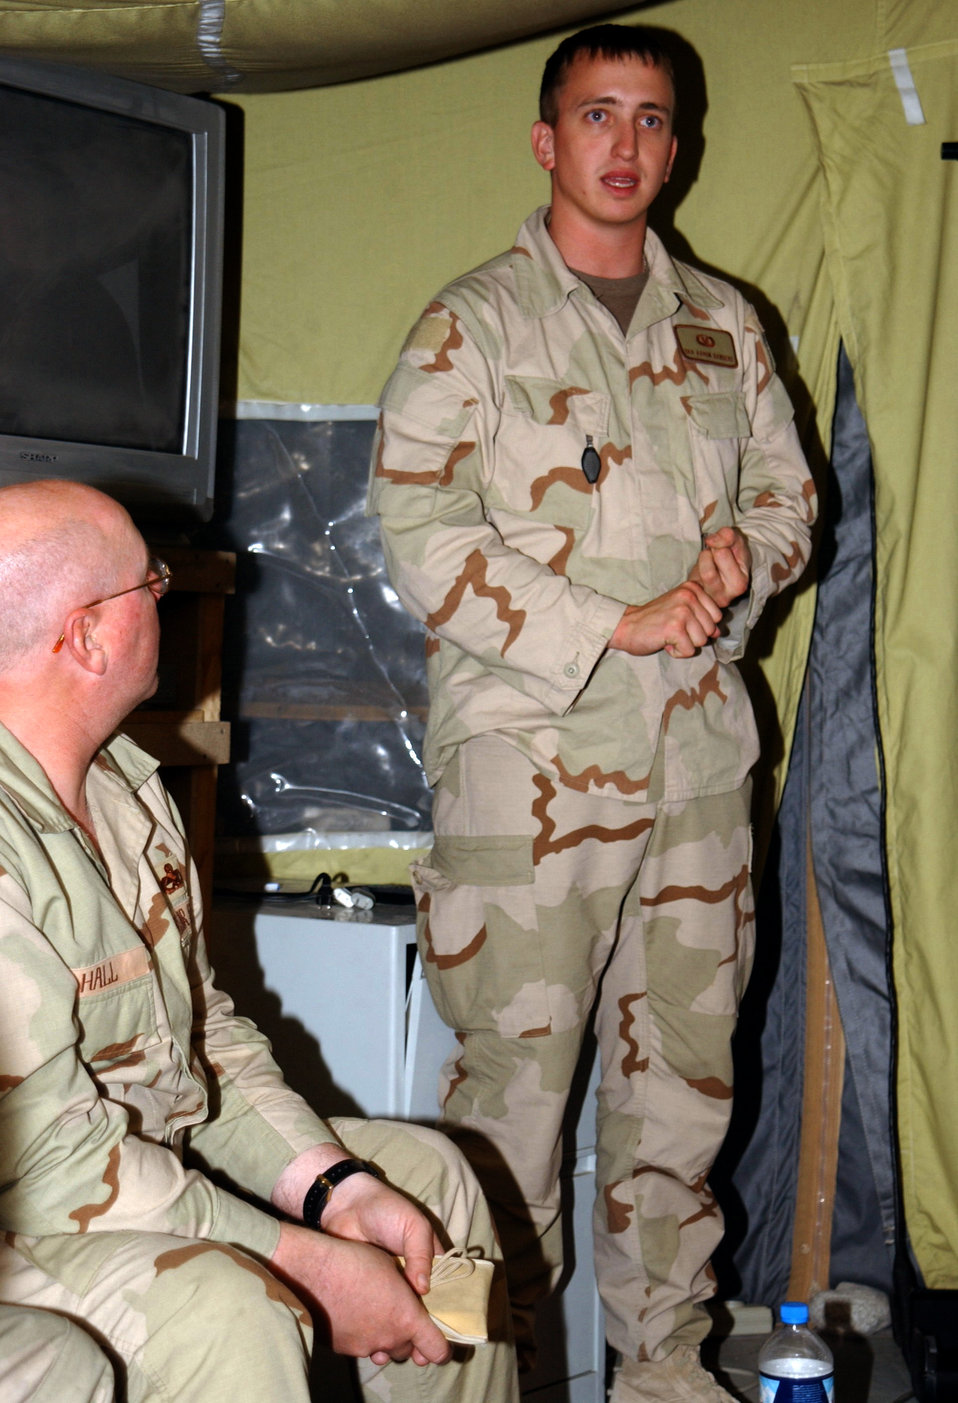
Preparing for worst-case scenario

MANAS AIR BASE, Kyrgyzstan -- Senior Airman Aaron Sanders teaches a survival course to maintainers here. Airman Sanders travels throughout the area to train aircrews and other Airmen who fly frequently in the theater. He is a survival specialist deployed from Fairchild Air Force Base, Wash.